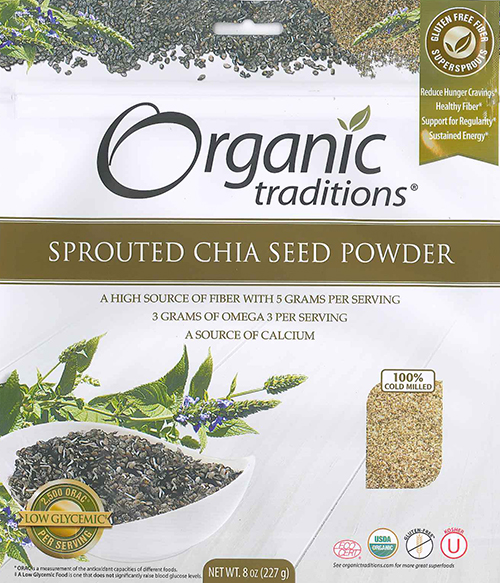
RECALLED – Chia and Flax seed powder

June 4, 2014 – Product Recall – Health Matters America, Inc, Recalls Organic Sprouted Chia Seed Powder and Sprouted Chia/flax Seed Powder Due to Possible Health Risk.